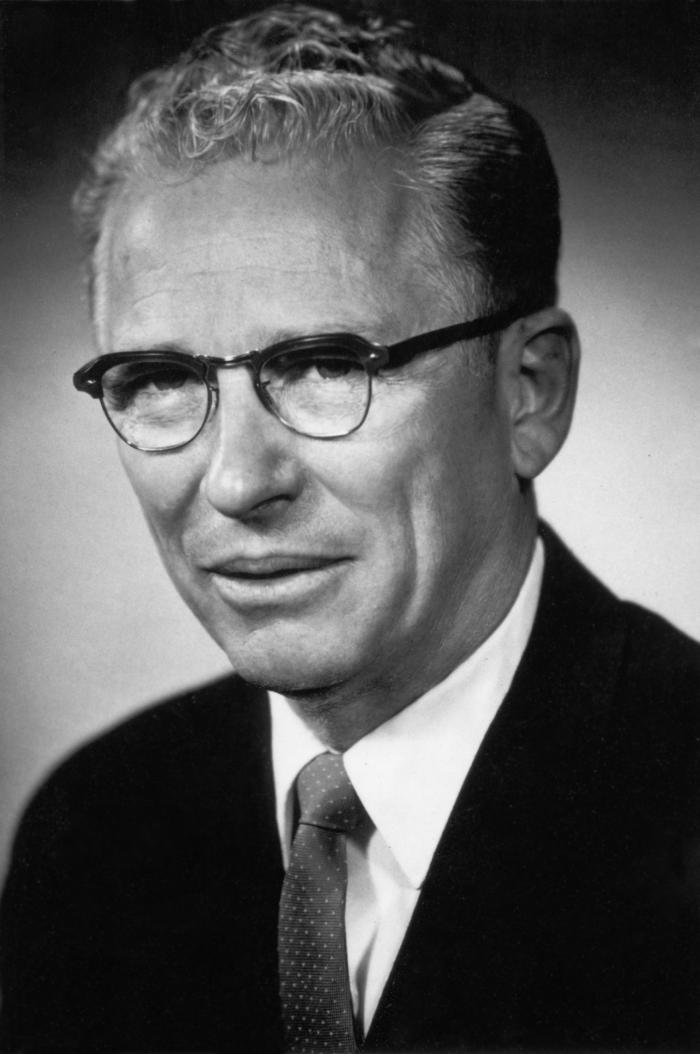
G. Robert Coatney, Ph.D. (1909-1991) was Director of the National Institute of Health's Laboratory of Parasite Chemotherapy from 1935 to 1975.